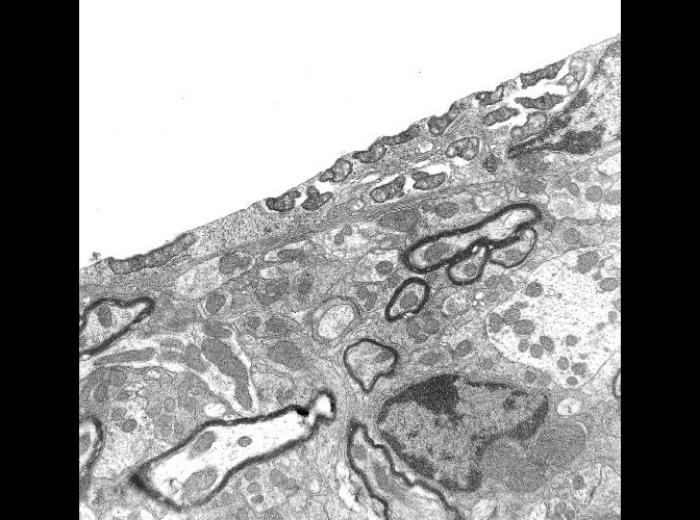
Multiple Rickettsia tsutsugamushi free within the cytoplasm of a mouse brain capillary endothelial cell.